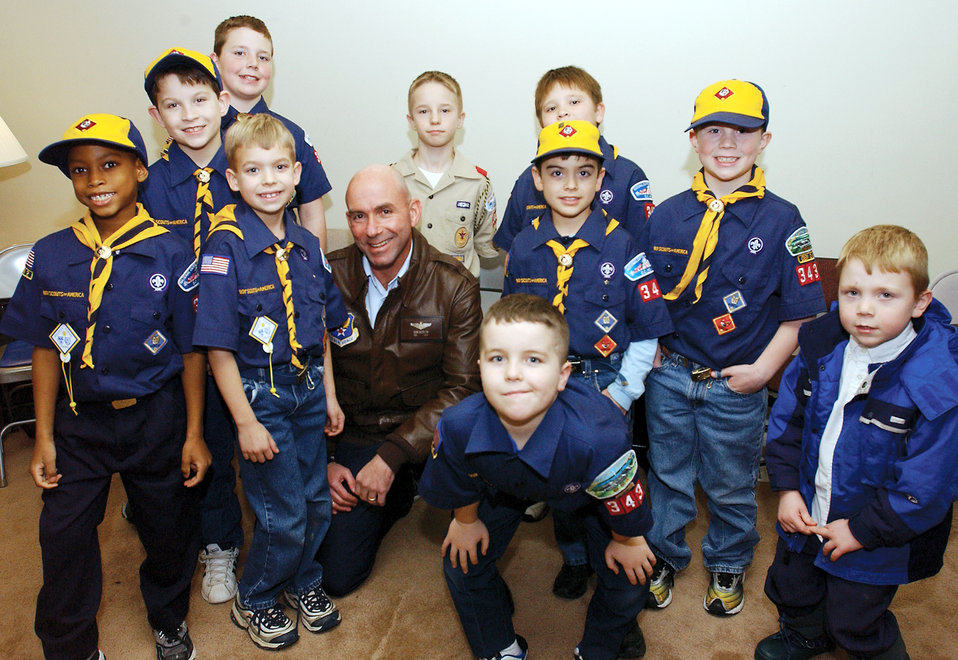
Hangin' with the Scouts

BOLLING AIR FORCE BASE, D.C. -- Col. Dan Koslov visits a local Cub Scout pack he donated money to. The Scouts used their holiday party savings to buy donations for injured servicemembers at Walter Reed Army Medical Center. Colonel Koslov donated a check to the Scouts after hearing about their generosity. The colonel is assigned to the Defense Intelligence Agency.